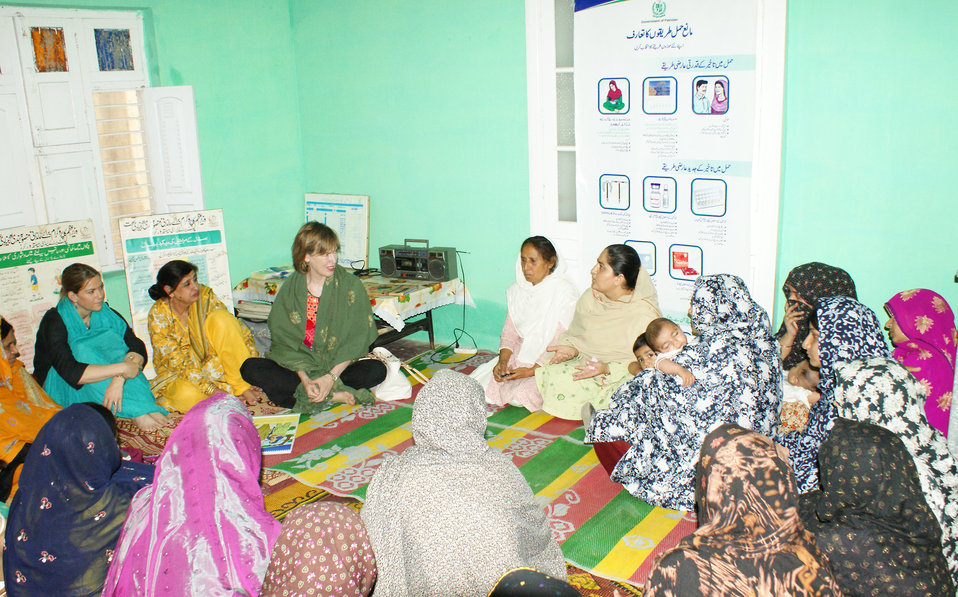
Lady Health Workers

April 15, 2011 - Dr. Marilyn Wyatt, wife of U.S. Ambassador Cameron Munter, visits a Health House near District Jhelum to participate in a training by a Lady Health Worker for local women about maternal and children's health.